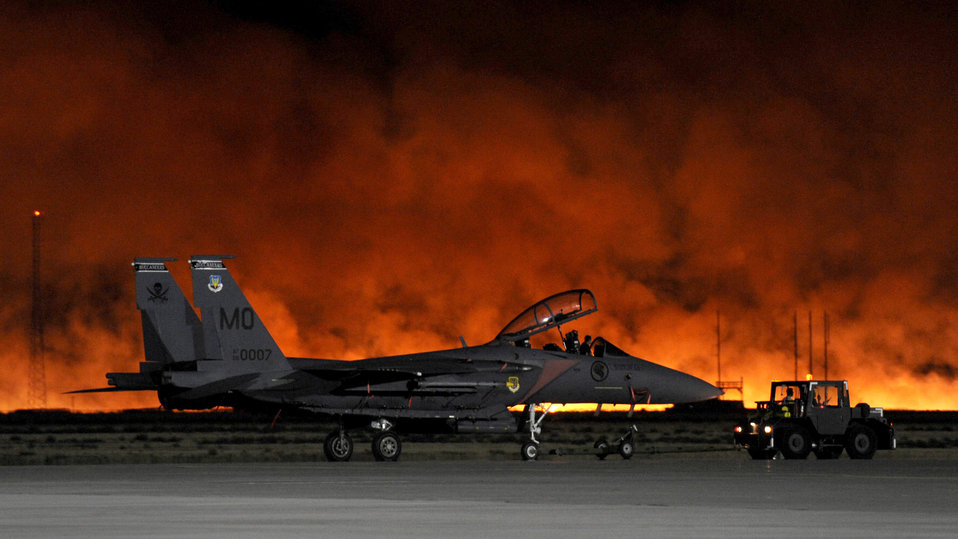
Fire in the sky

A brush fire lights up the evening sky behind an F-15SG at Mountain Home Air Force Base, Idaho, Aug. 15, 2011. Flightline activity was stopped and personnel were evacuated from flightline buildings as the fire approached the base. The fire burned approximately 3,000 acres, including five acres on the northwest corner of the base.